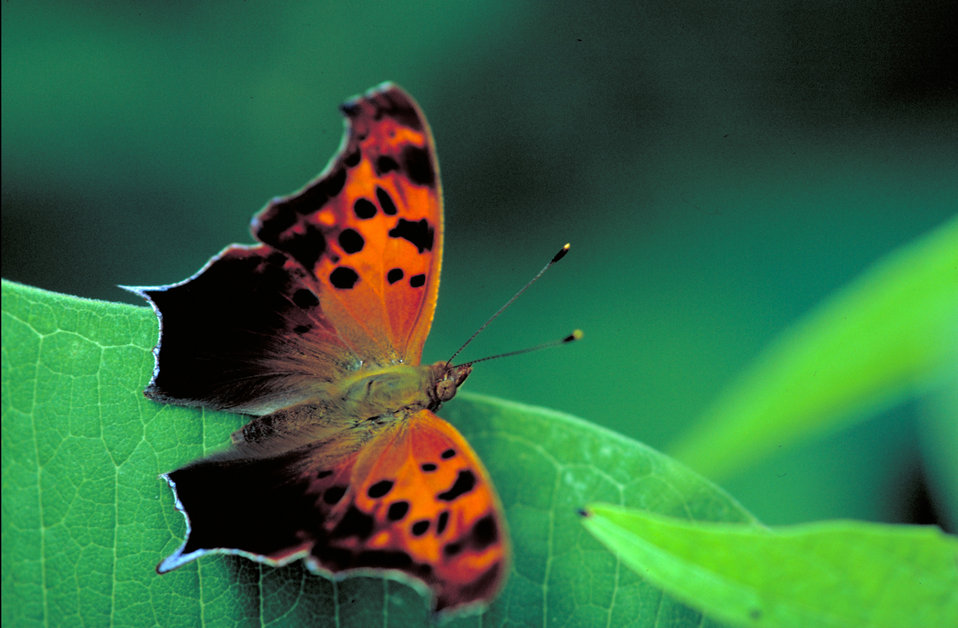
question mark butterfly

Dr. Thomas G. Barnes, USFWS